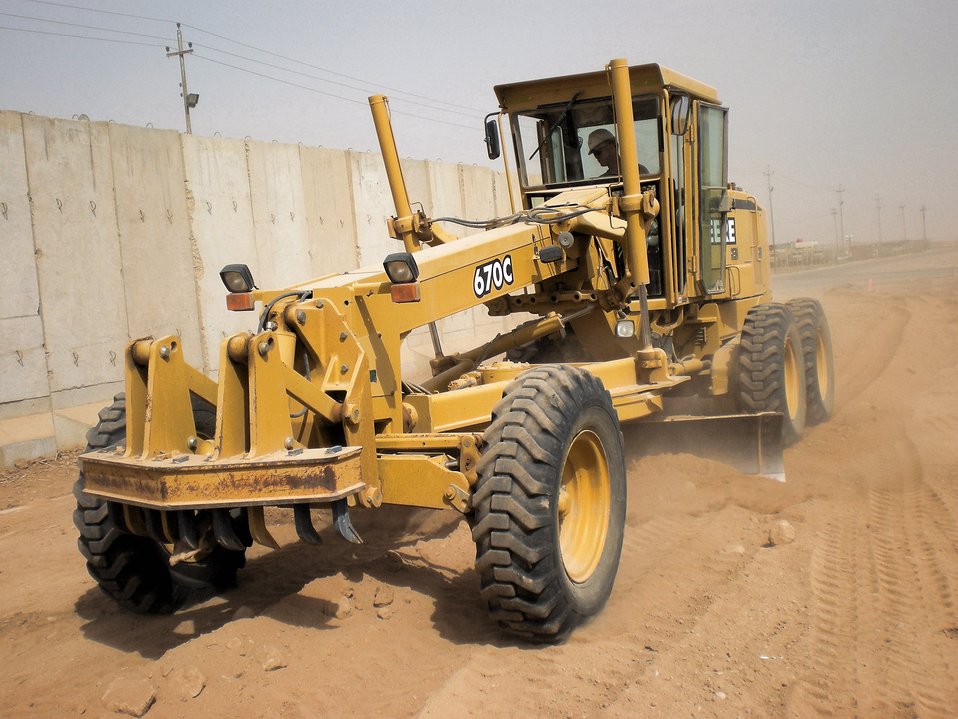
CE Airmen complete projects to benefit U.S., Iraqi army

Staff Sgt. Stephen Hansen grades an area of dirt to prepare it for pouring of a concrete pad at Forward Operating Base Caldwell, Iraq. Airmen from the 732 ECES Dirt Boys poured almost 1,577 cubic yards of concrete during three separate pad projects at the FOB. These pads will allow the Soldiers to perform maintenance on their vehicles without having to be in the dirt and mud. Sergeant Hansen is deployed from Holloman Air Force Base, N.M. Sergeant Hansen is a heavy equipment operator with the 732nd Expeditionary Civil Engineer Squadron.